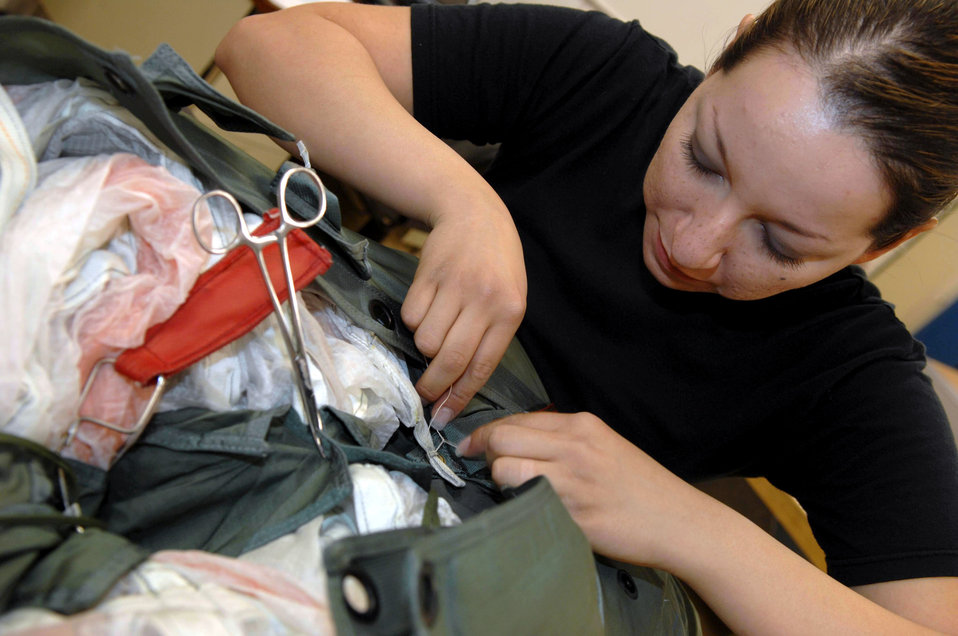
Aircrews depend on these Airmen

Senior Airman Brenda Schaub packs a parachute June 25 at Davis-Monthan Air Force Base, Ariz. Airman Schaub is an aircrew flight equipment journeyman assigned to the 355th Operation Support Squadron where she also maintains, repairs, and fabricates other types of survival equipment.